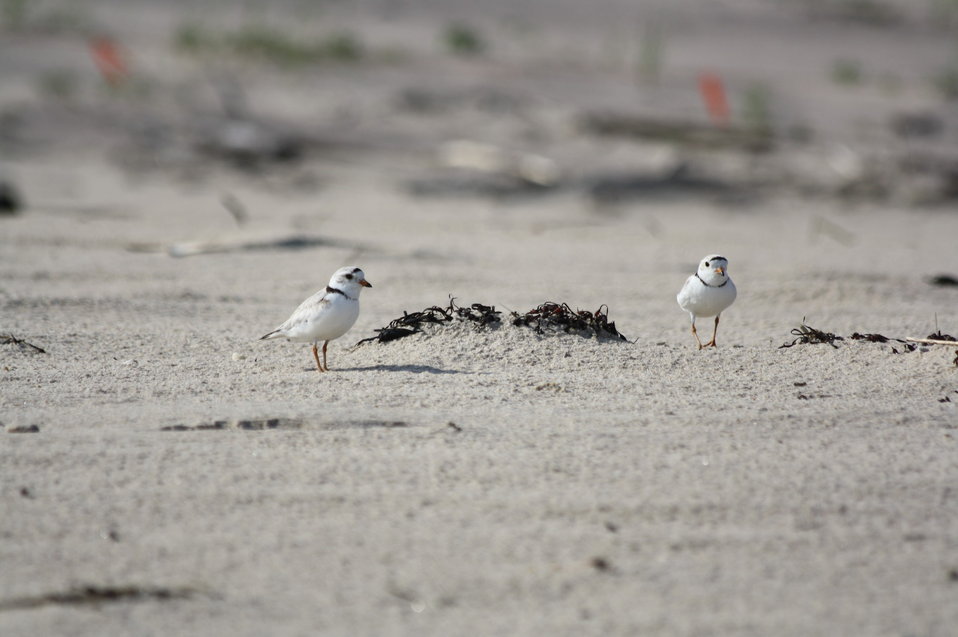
Piping plovers at Amagansett National Wildlife Refuge.